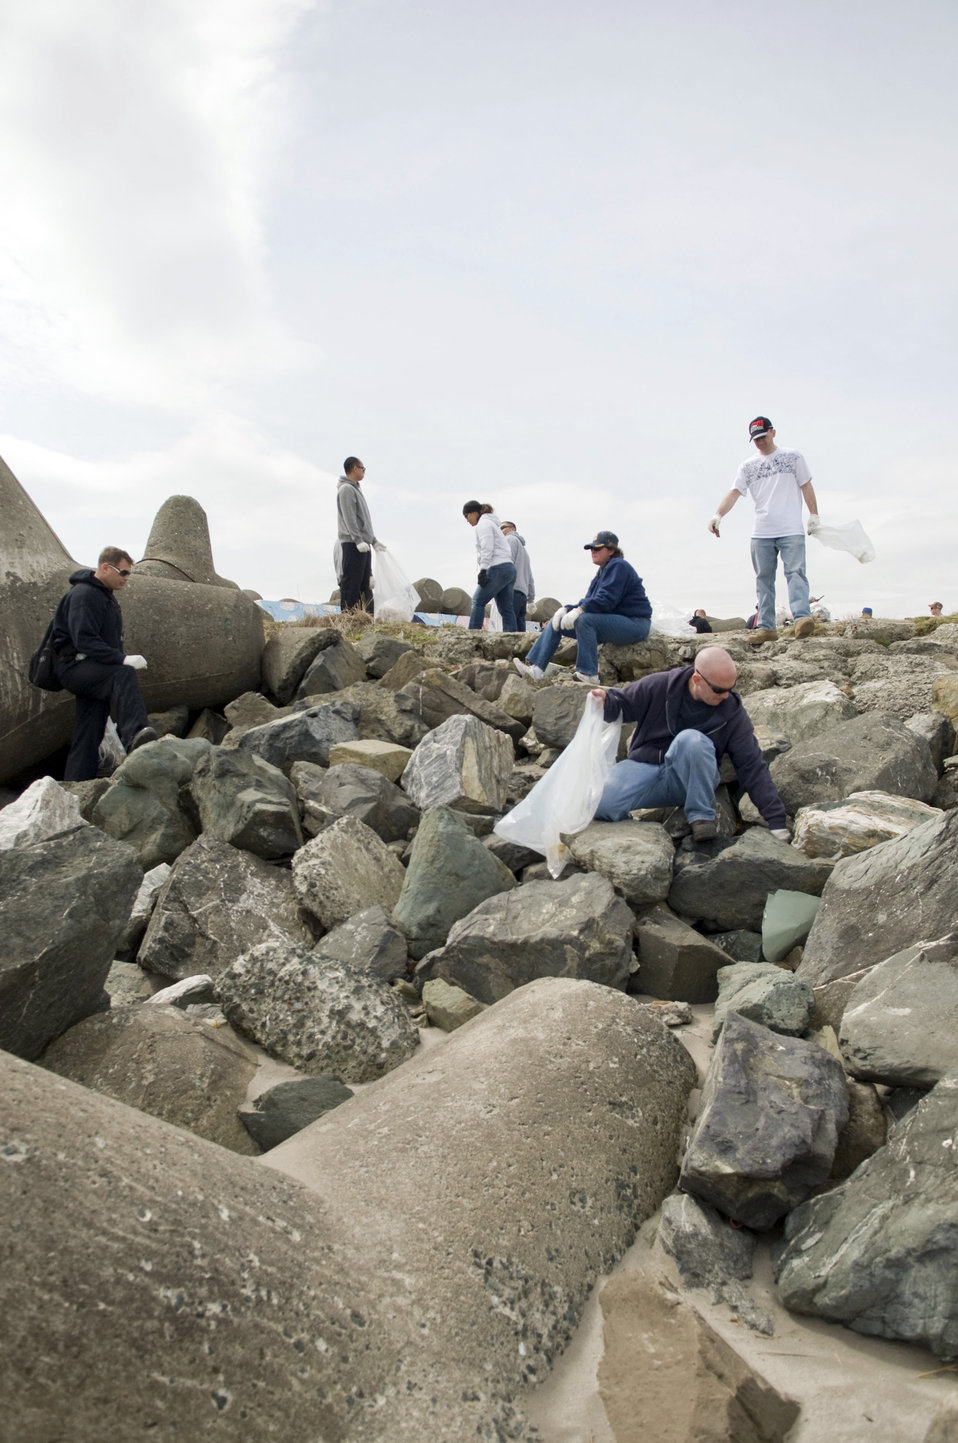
Misawa servicemembers, Japanese clean beach, port

More than 300 volunteers from Misawa Air Base and the local Japanese community volunteered at the 13th Annual Misawa port and beach cleanup event, April 10, 2010, at Misawa Air Base, Japan.